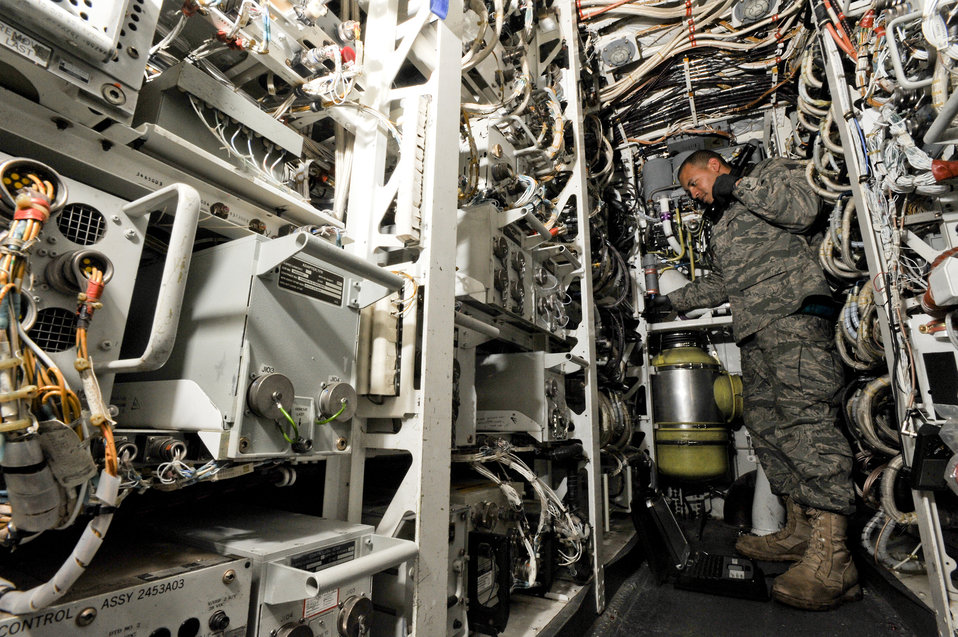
Airmen keep B-1B ready for bombs on target

Staff Sgt. Marvin Fleming performs maintenance on the back up oxygen system of a B-1B Lancer Jan. 29 at an air base in Southwest Asia. Sergeant Fleming is a an electrical and environmental technician for the 7th Aircraft Maintenance Unit deployed from Dyess Air Force Base, Texas. He is a native of Long Beach, Calif.